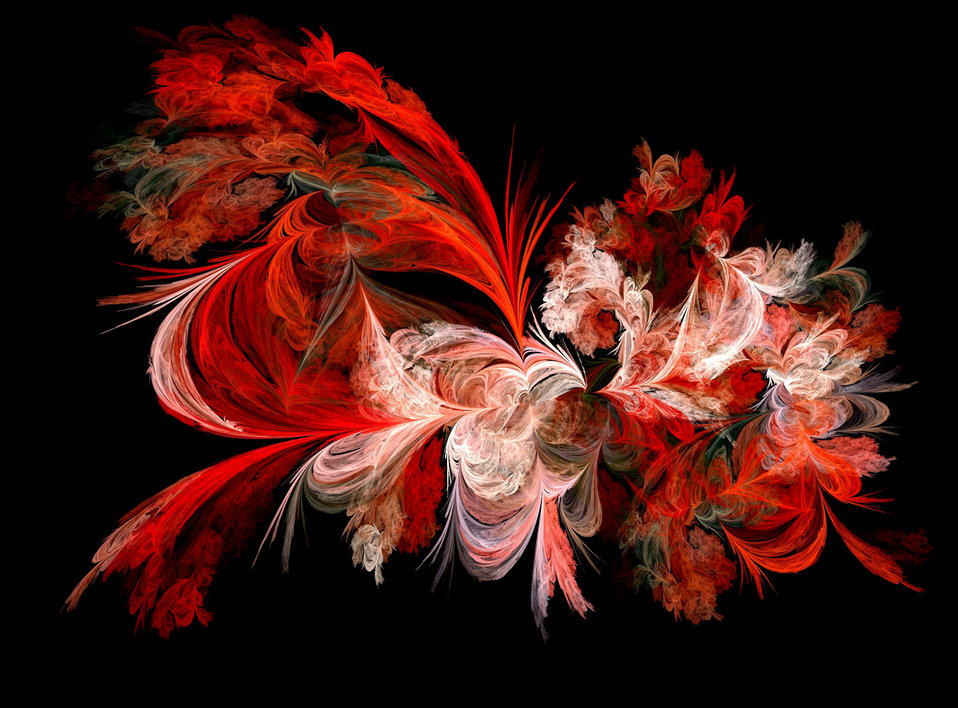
Red and white fractal.